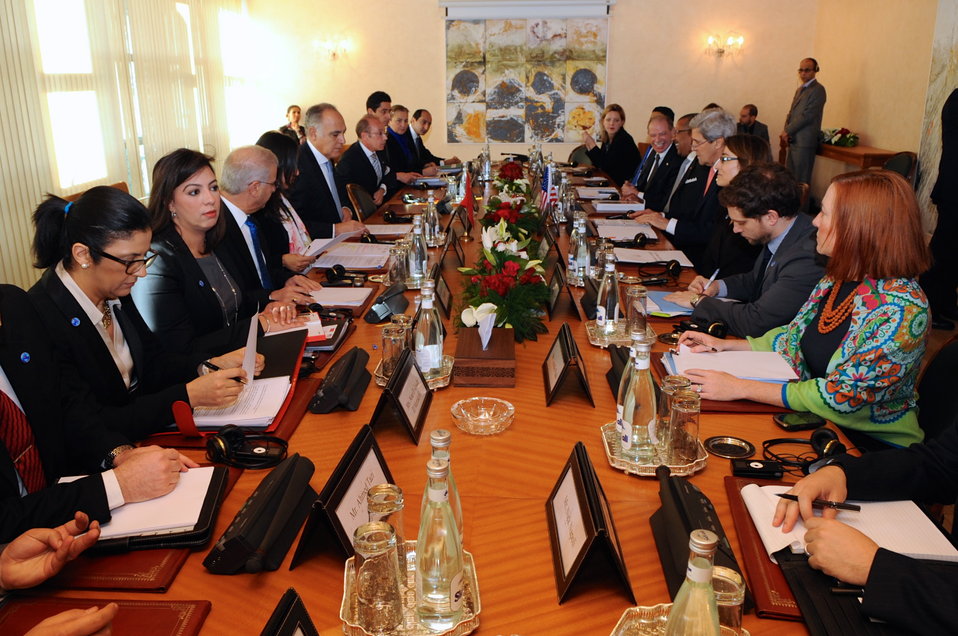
Secretary Kerry and Moroccan Foreign Minister Kick-off Strategic Dialogue in Rabat

U.S. Secretary of State John Kerry and Moroccan Foreign Minister Salaheddine Mezouar sit with their respective teams before the start of a Strategic Dialogue between their two countries at the Ministry of Foreign Affairs in Rabat, Morocco on April 4, 2014.